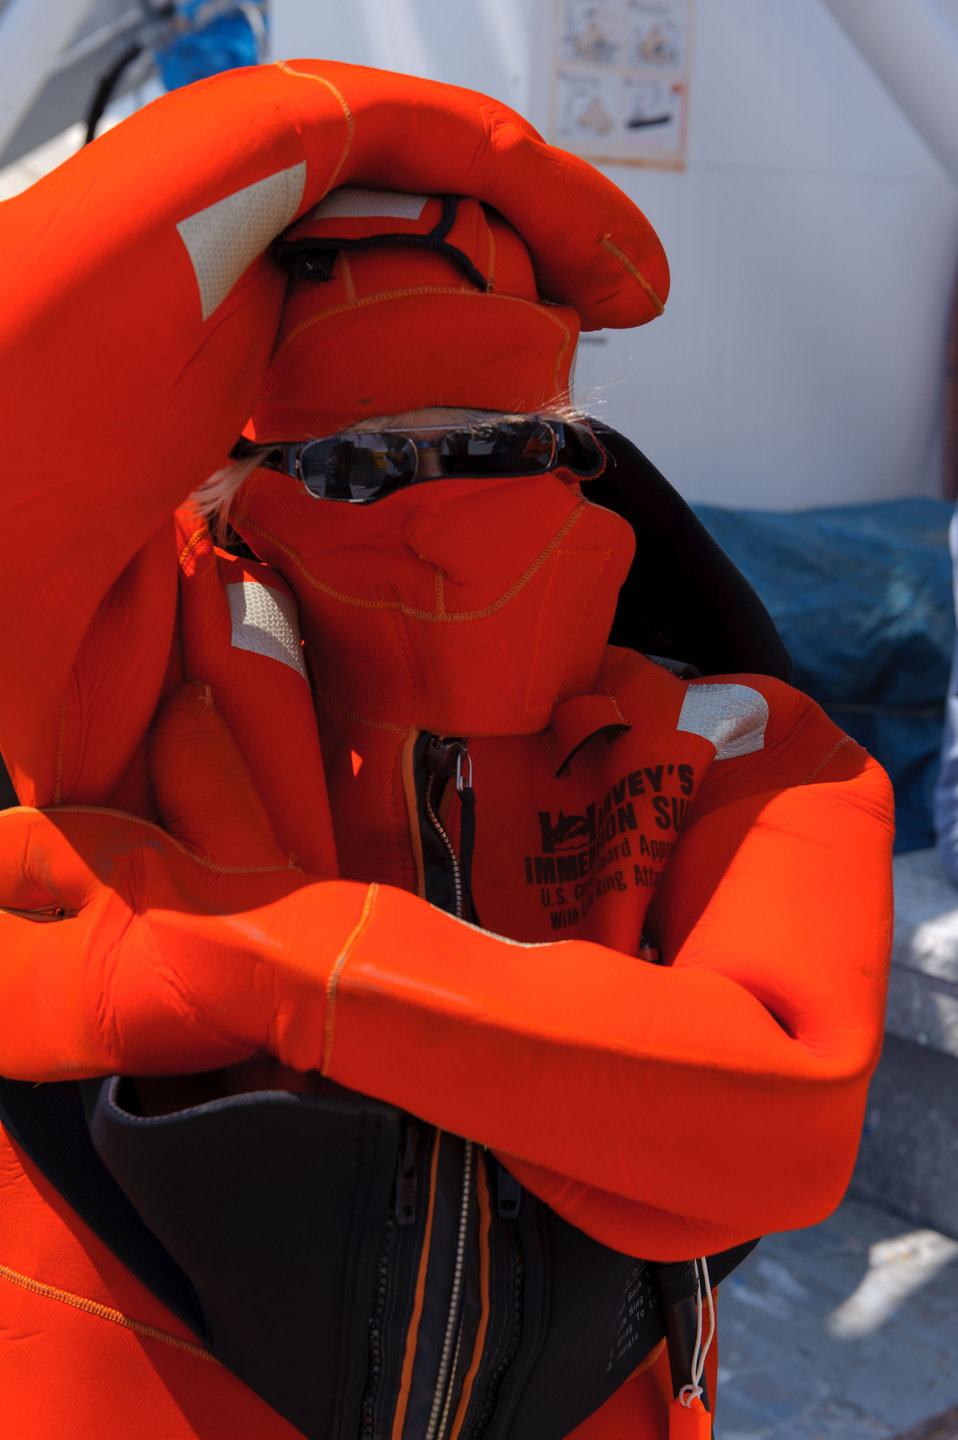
August 5, 2011 Should you ever have to abandon ship, assume this position!

Contrary to your first impression of this photo... you're supposed to position yourself this way to protect yourself as you jump off deck. Once in the water it also helps you be seen and conserve energy. These survival suits act as full body life preservers keeping you warm and afloat.